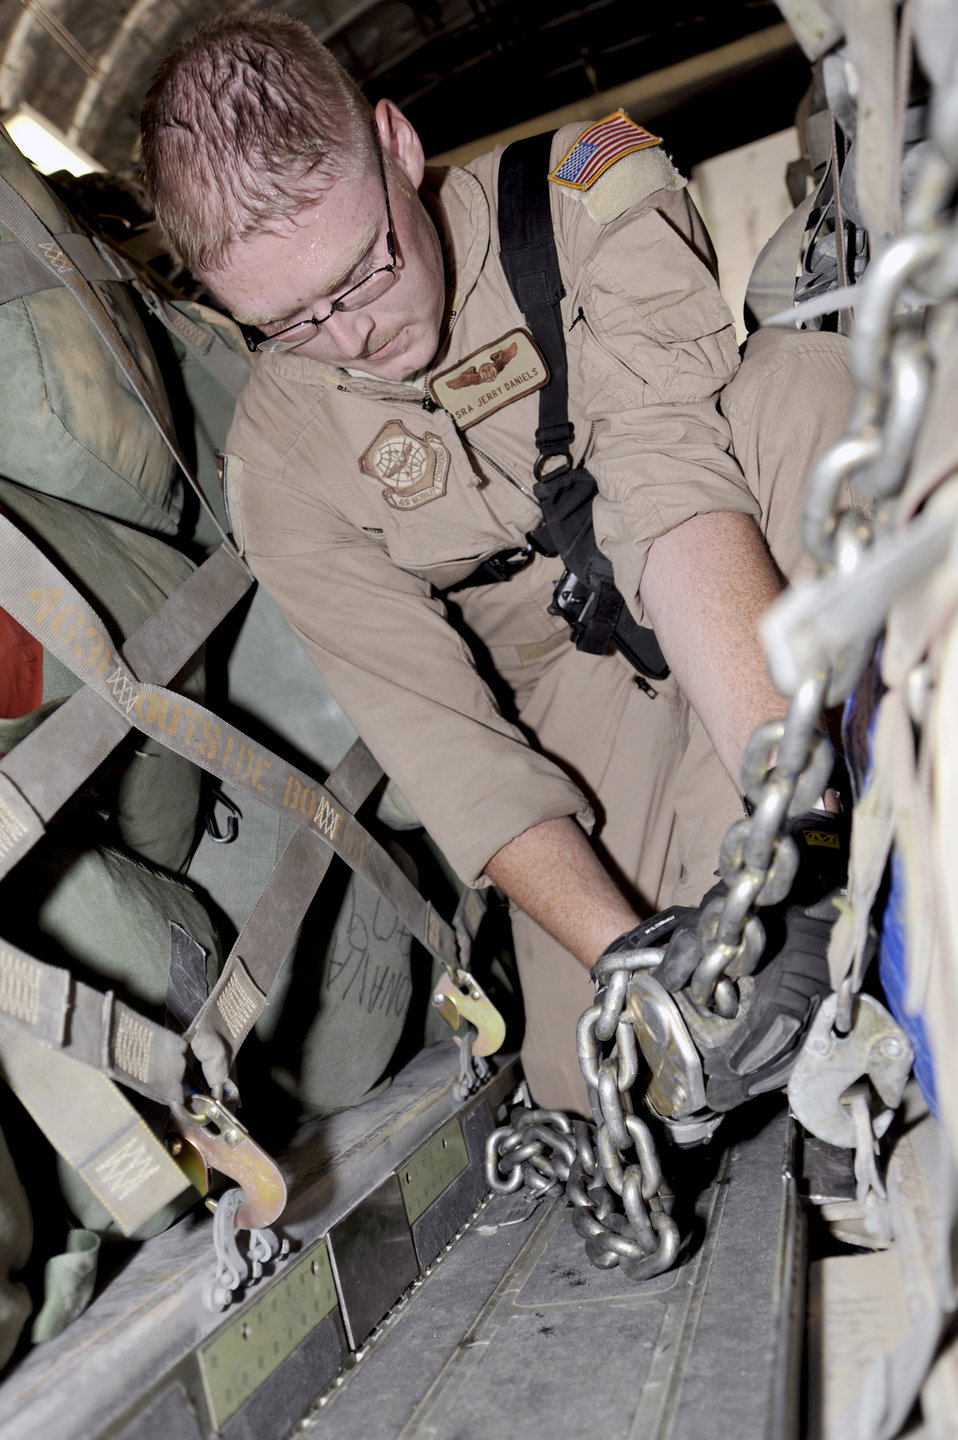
Air Force assets play vital role in Iraq Drawdown

Senior Airman Jerry Daniels, 817th Expeditionary Airlift Squadron loadmaster, connects supplemental restraints to palletized baggage on a C-17 Globemaster III July 10, 2010, at Sather Air Base, Iraq. The Air Force is playing a vital role in the Iraq drawdown to 50,000 troops by Aug. 31, 2010.